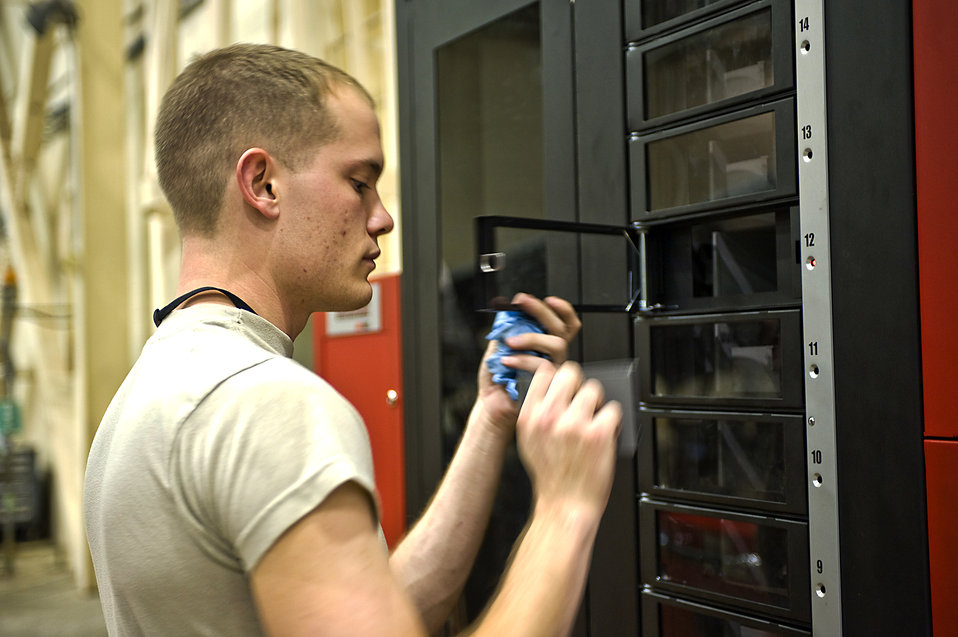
Barksdale sergeant streamlines maintenance process

Senior Airman Bryant Fisher removes a tray of parts from a bench stock vending machine Dec. 15, 2010, in the phase hangar on Barksdale Air Force Base, La. The machine tracks the precise inventory of each part by measuring the difference in weight before and after each transaction. Airman Fisher is a maintainer with the 2nd Maintenance Squadron.